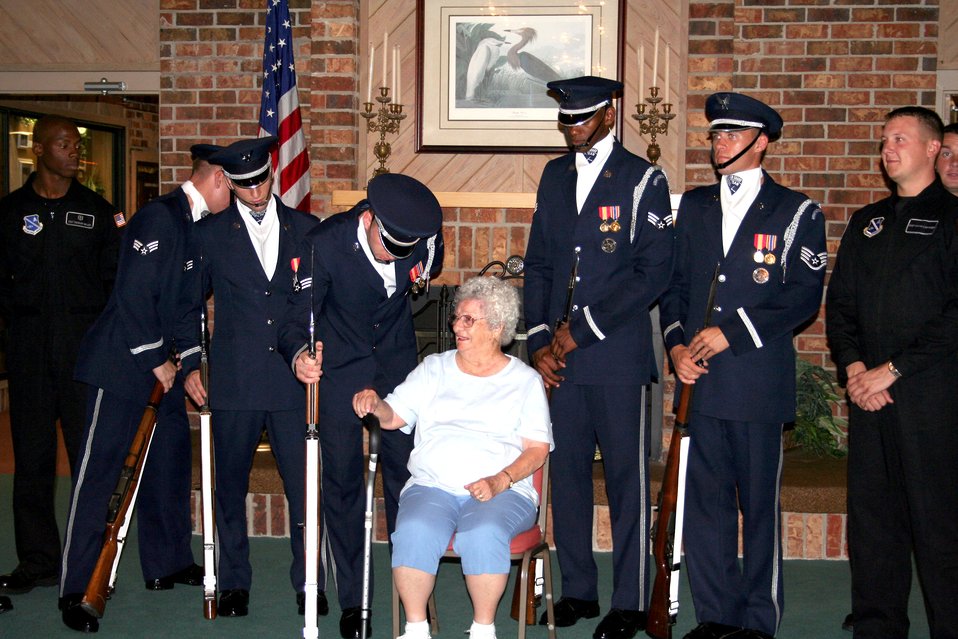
Air Force Honor Guard visits Enlisted Village

Airmen from the Air Force Honor Guard drill team prepare to sing